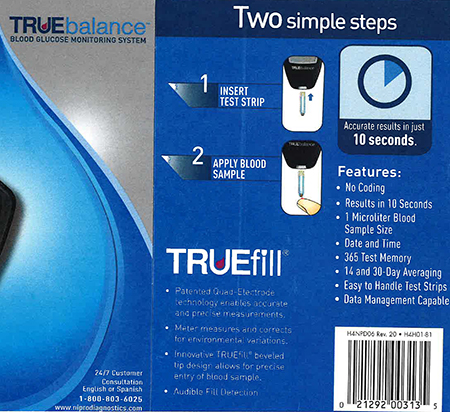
RECALLED – Blood Glucose Meters

January 2, 2014 – Product Recall – Nipro Diagnostics, Inc. Initiates Voluntary Recall of Certain TRUEbalance and TRUEtrack Blood Glucose Meters.